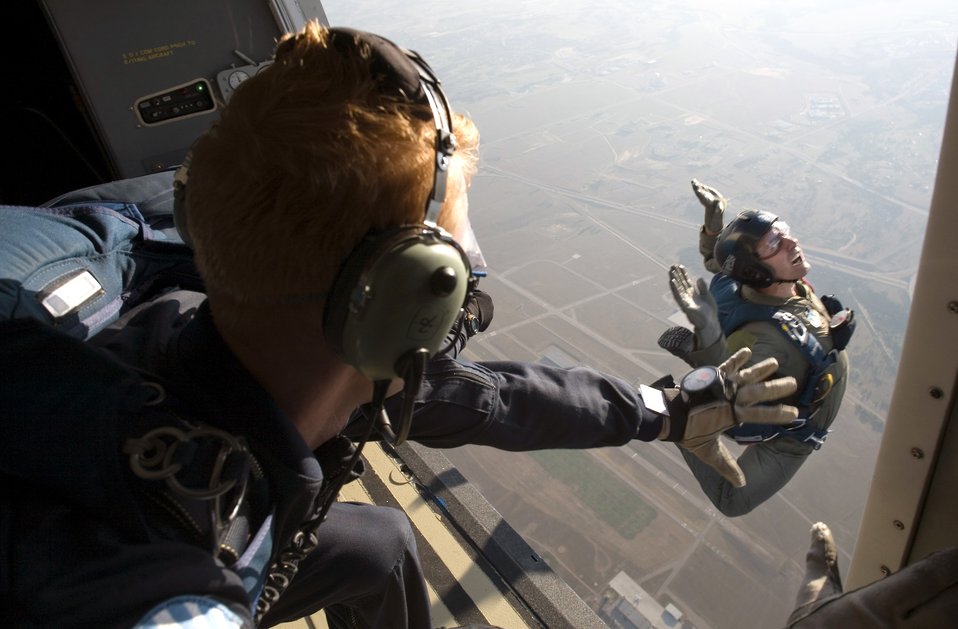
Training jump

U.S. Air Force Academy Cadet 3rd Class Trevor Steen arches as he jumps from an altitude of 4,500 feet. This was Steen's fifth and final training jump, earning him the Air Force basic jump badge.